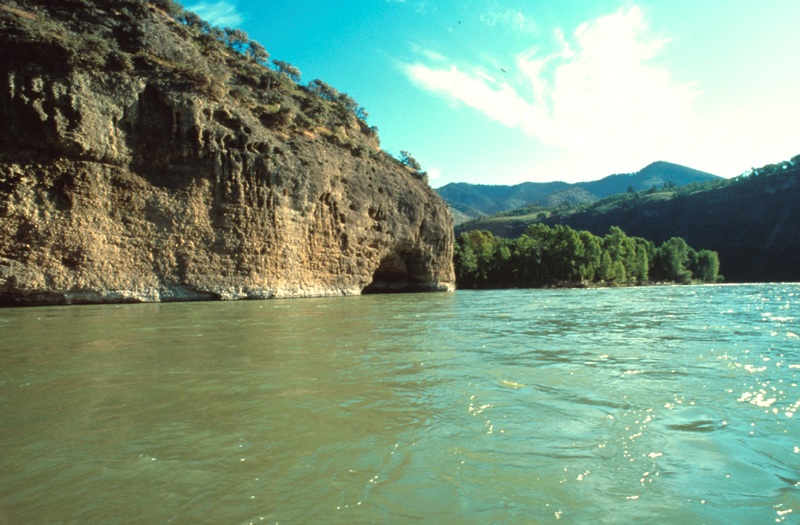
South Fork of the Snake River